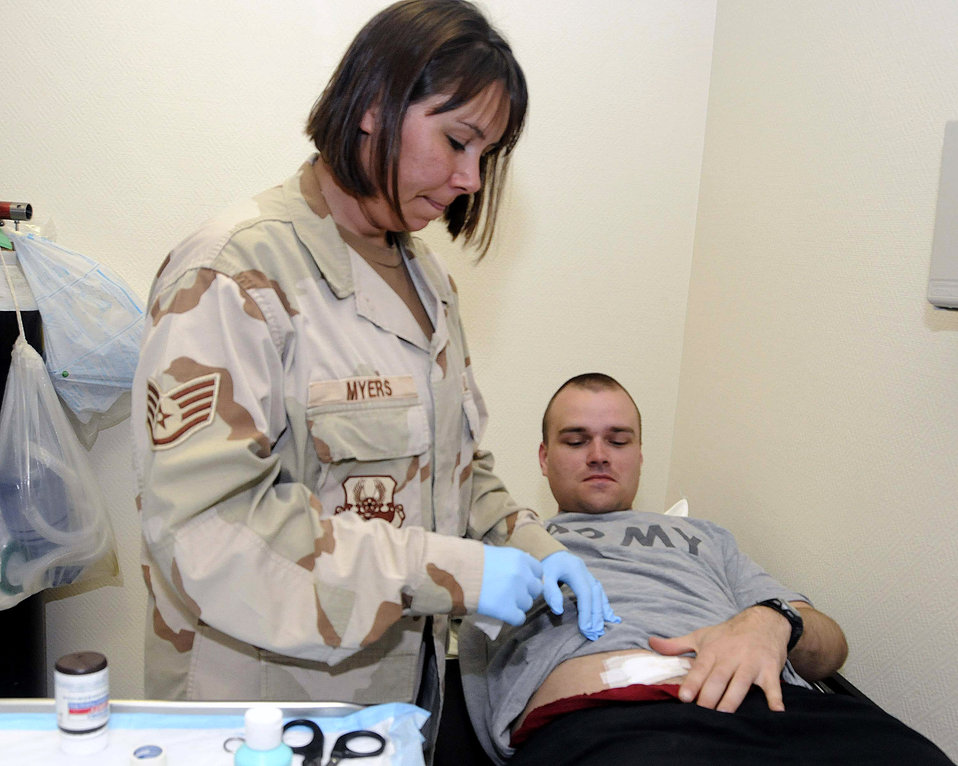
Medical group capitalizes on total force cohesion

Staff Sgt. Trisha Myers dresses a wound on Army Specialist Eric Beauchamp's abdomen Feb. 19 at a hospital in Southwest Asia. The Army speicalist was wounded with a 50- caliber gun exploded in Iraq. Sergeant Myers is an Air National Guard member.